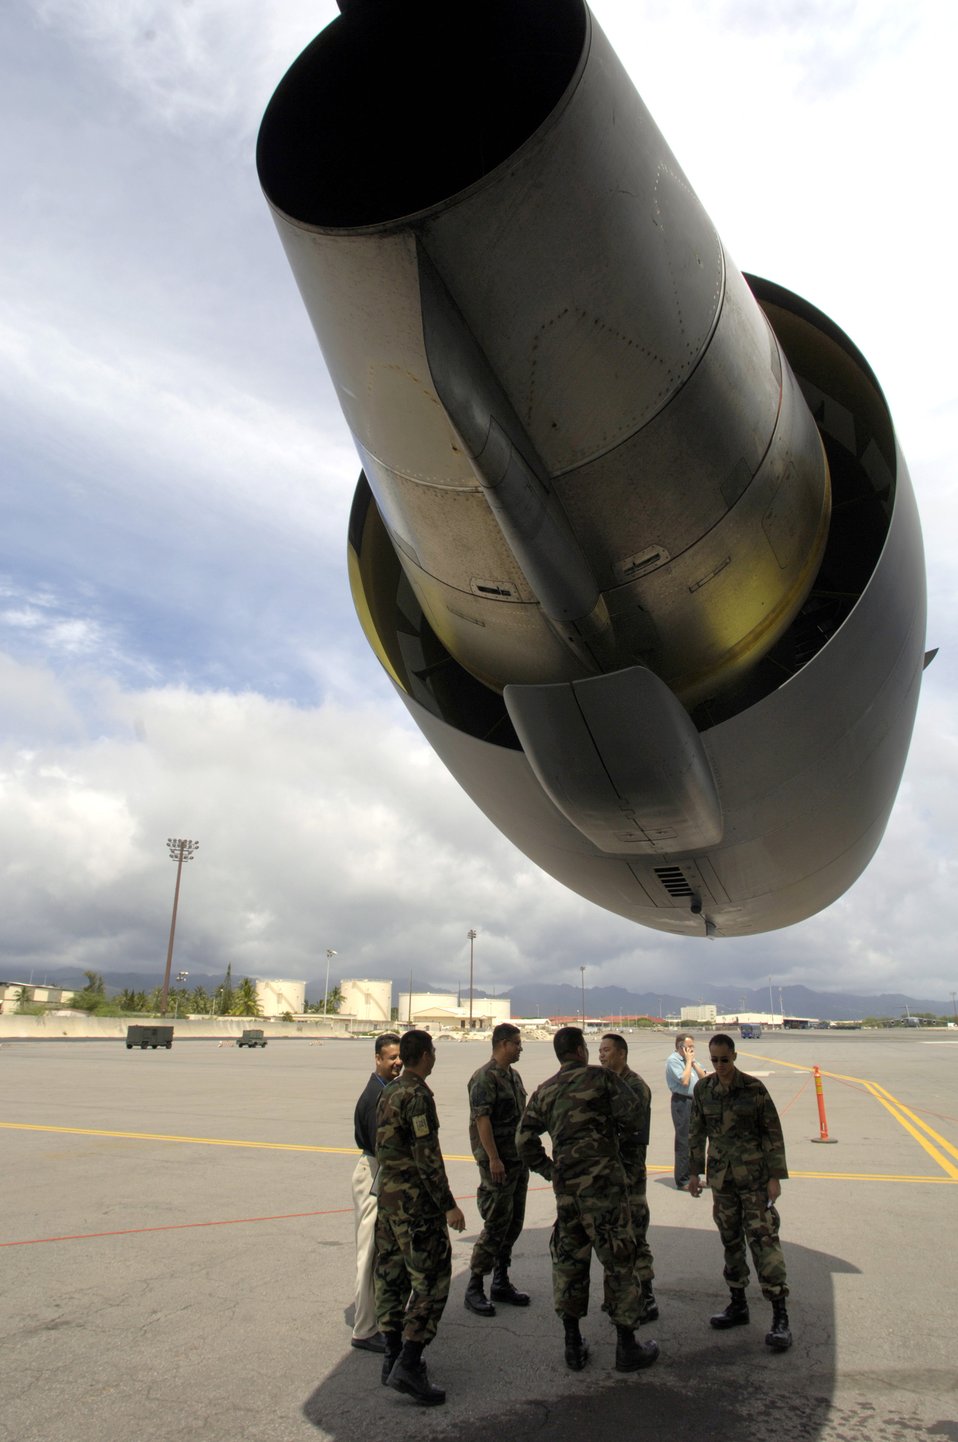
Hickam C-17 crews learn 'Lean' concepts

Boeing representatives and Airmen from the Hawaii Air National Guard's 154th Maintenance Squadron discuss maintenance procedures for a C-17 Globemaster III at Hickam Air Force Base, Hawaii, on Tuesday, April 11, 2006. The guardsmen are learning how to streamline their maintenance processes.